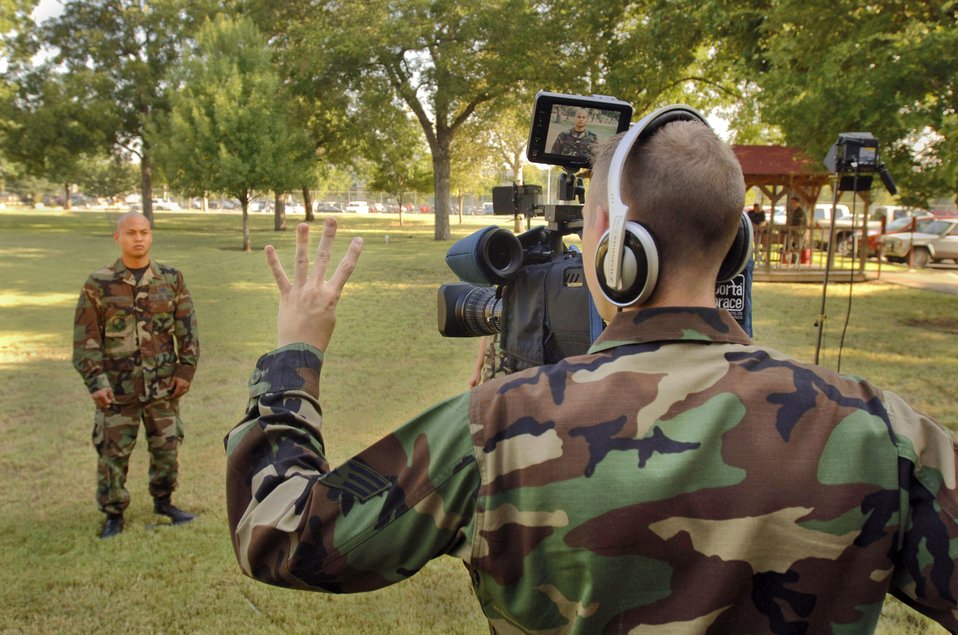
Holiday greetings teams begin worldwide tour

SAN ANTONIO -- Senior Airman Ryan Nelson tapes a mock holiday greeting during a training session here. Four teams from Army and Air Force Hometown News Service will travel to about 70 overseas installations, including 10 forward-deployed locations, to tape Airmen, Soldiers, Sailors, Marines and Department of Defense civilians who want to send holiday messages home.